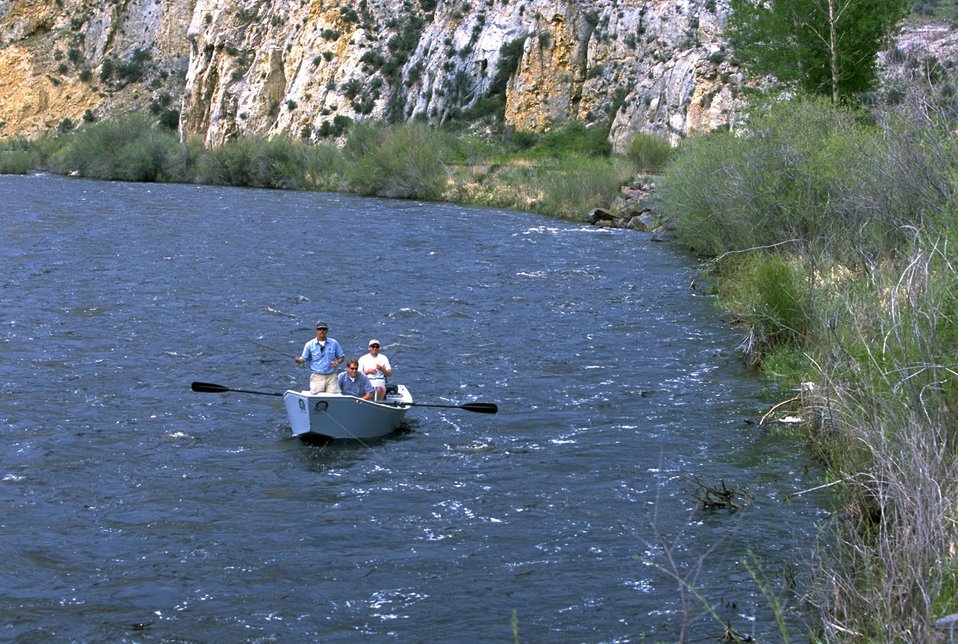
Fishing on the Big Hole River